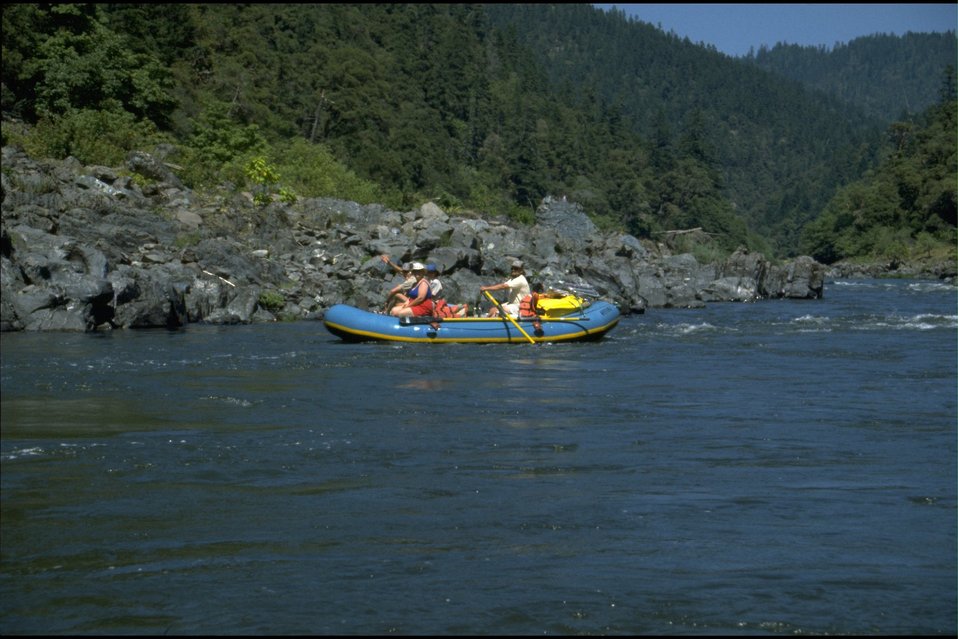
Rogue River - Wild section. Raft/Scenery. Blm Orientation Trip.